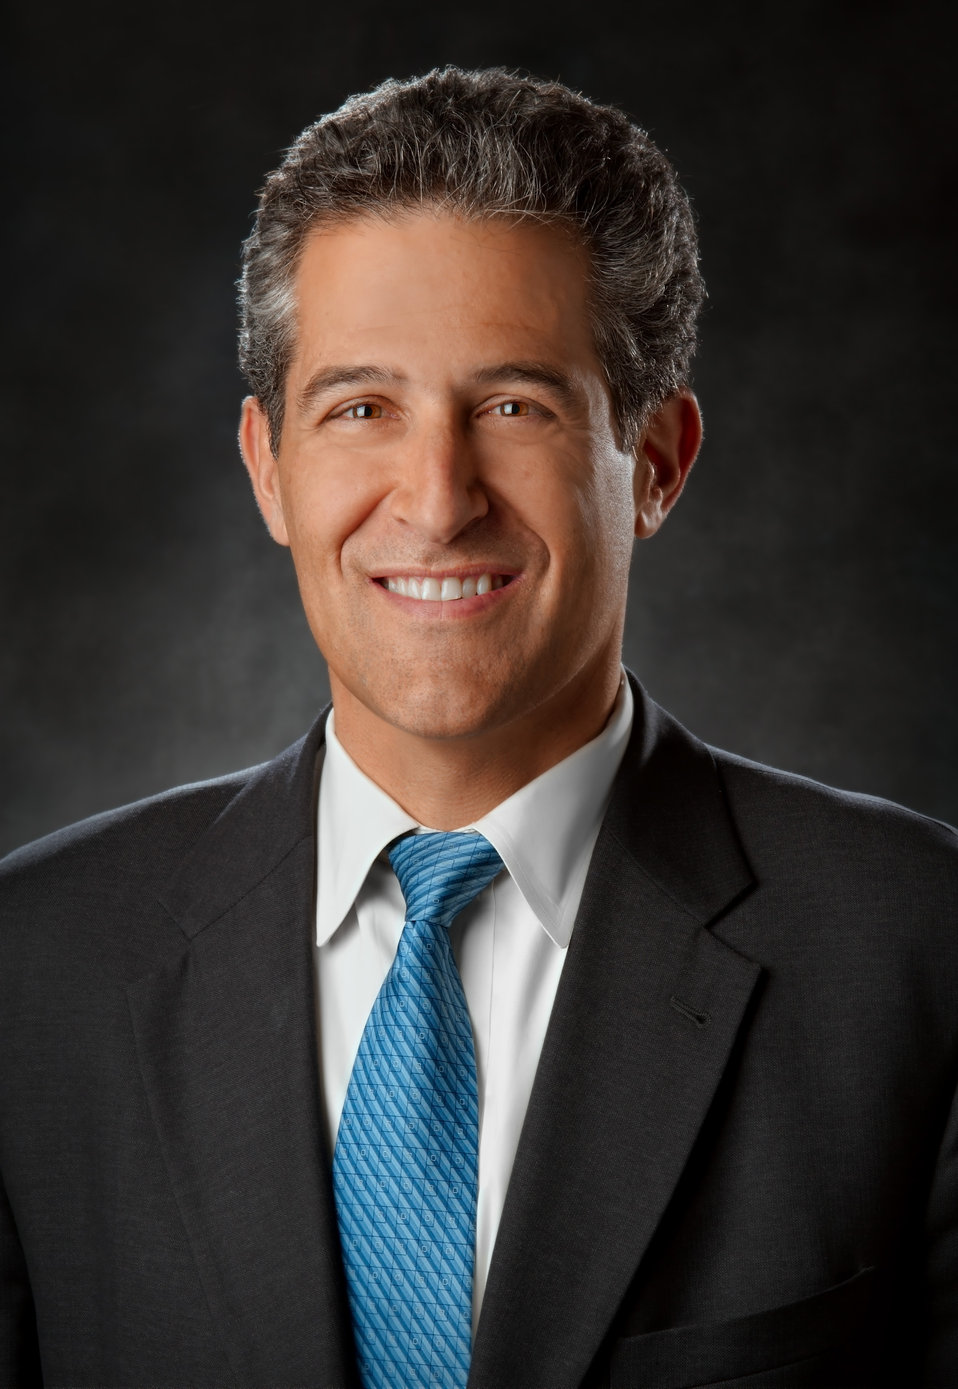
This 2008 photograph depicts Richard E. Besser, M.D., currently, an ABC News Medical editor. Formerly, Dr. Besser was the acting director for the Centers for Disease Control and Prevention (CDC), and the acting administrator for the Agency for Toxic Substances and Disease Registry (ATSDR). Prior to his position as the Acting CDC Director, Dr. Besser held the position of Director of the Coordinating Office for Terrorism Preparedness and Emergency Response.